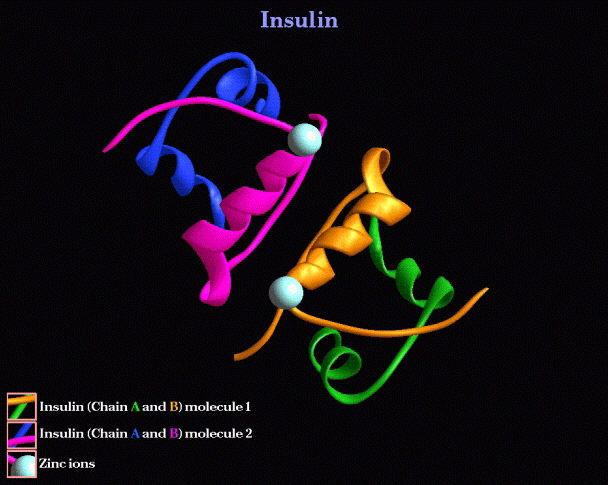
Molecular structure of insulin.